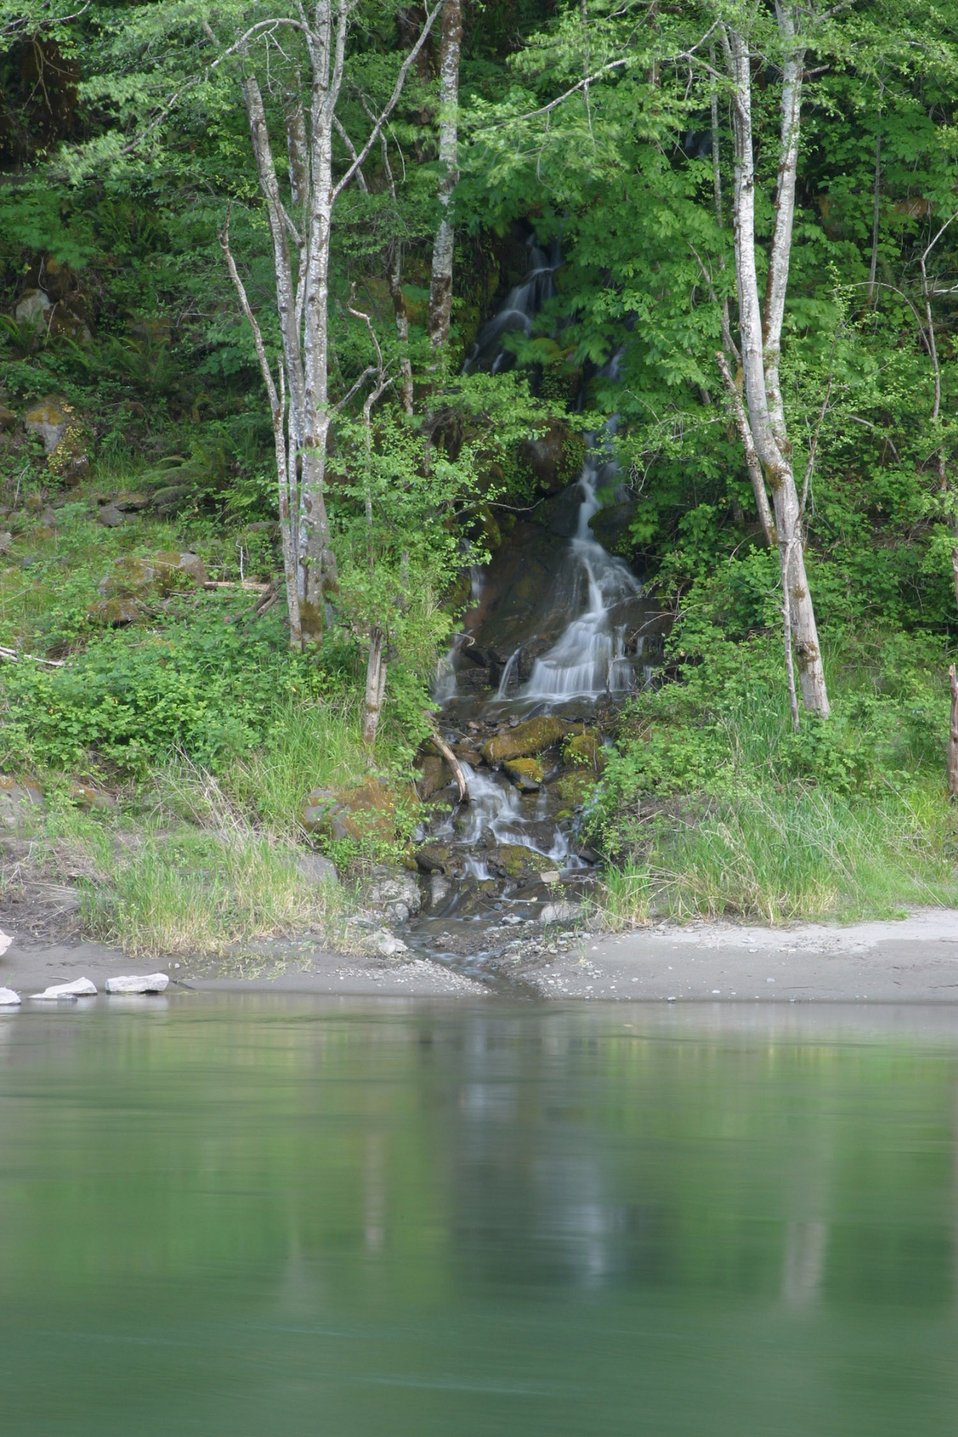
Wild section of the Rogue River from Grave Creek to Foster Bar May 19 to May 22.